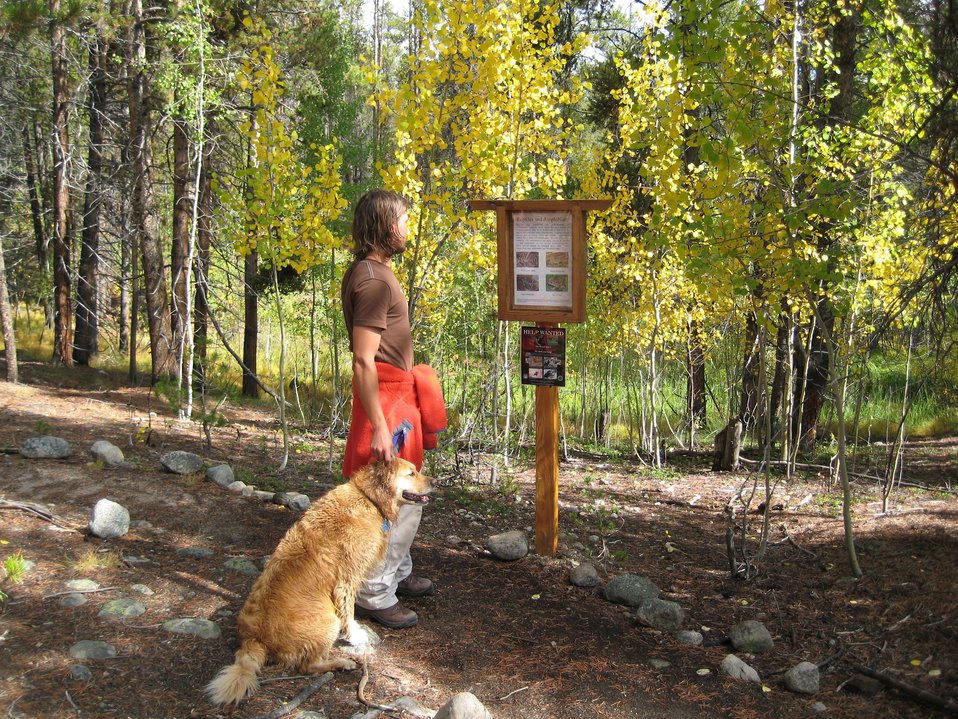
Evergreen Lakes Trail

Evergreen Lakes Nature Trail on the Leadville National Fish Hatchery is a great place to take the whole family and pups! Along the way you will find various nature signs describing the surrounding vegetation and animals inhabiting the area.